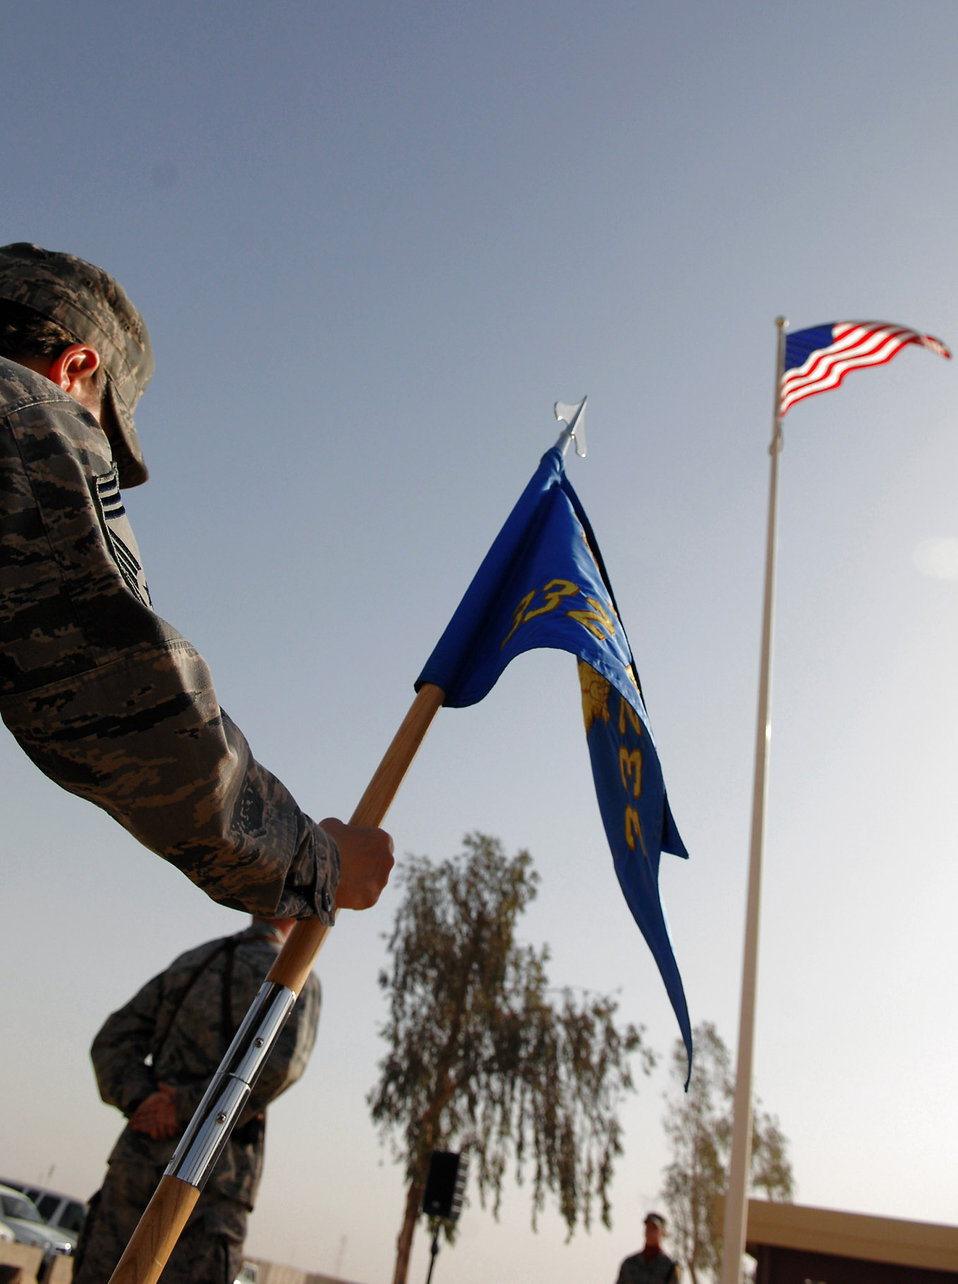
455 AEW holds memorial vigil

Airmen assigned to the 332nd Air Expeditionary Wing participate in a Memorial Day observance ceremony at Balad Air Base, Iraq, May 26. During the ceremony, the names of 44 Airmen assigned to the 332nd AEW who have died since 2003 were read. The list included the names of three Airmen who died this year.